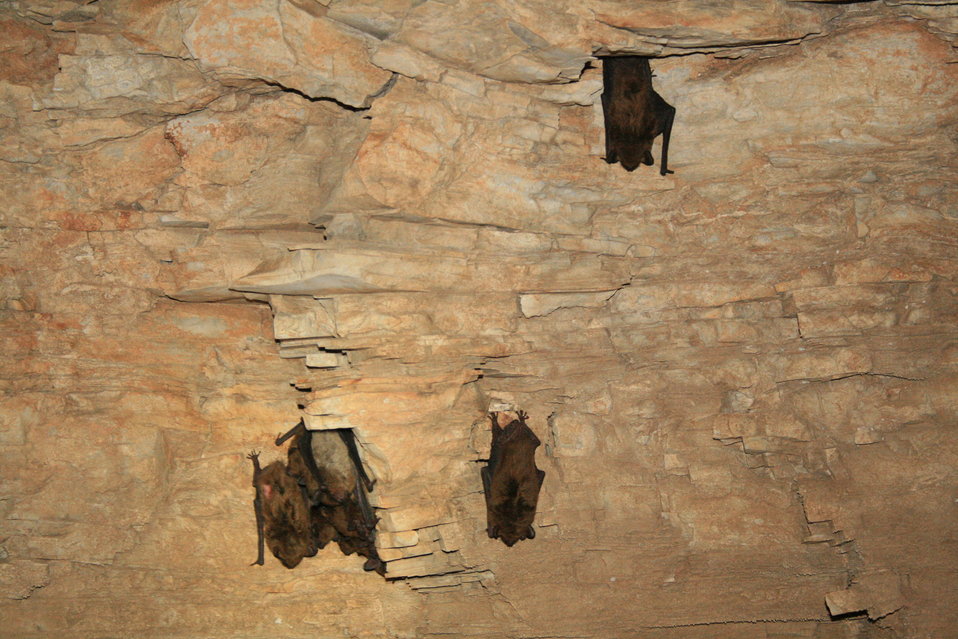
healthy hibernating big brown bats

Eptesicus fuscus